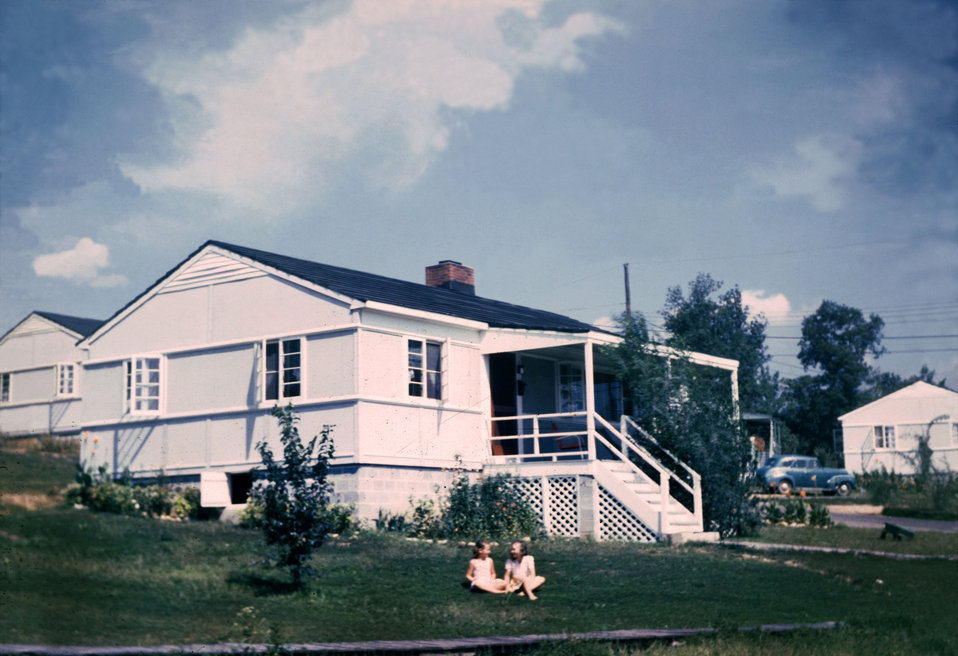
House in Oak Ridge

DOE photo by Ed Westcott

Oak Ridge Tennessee 1940s